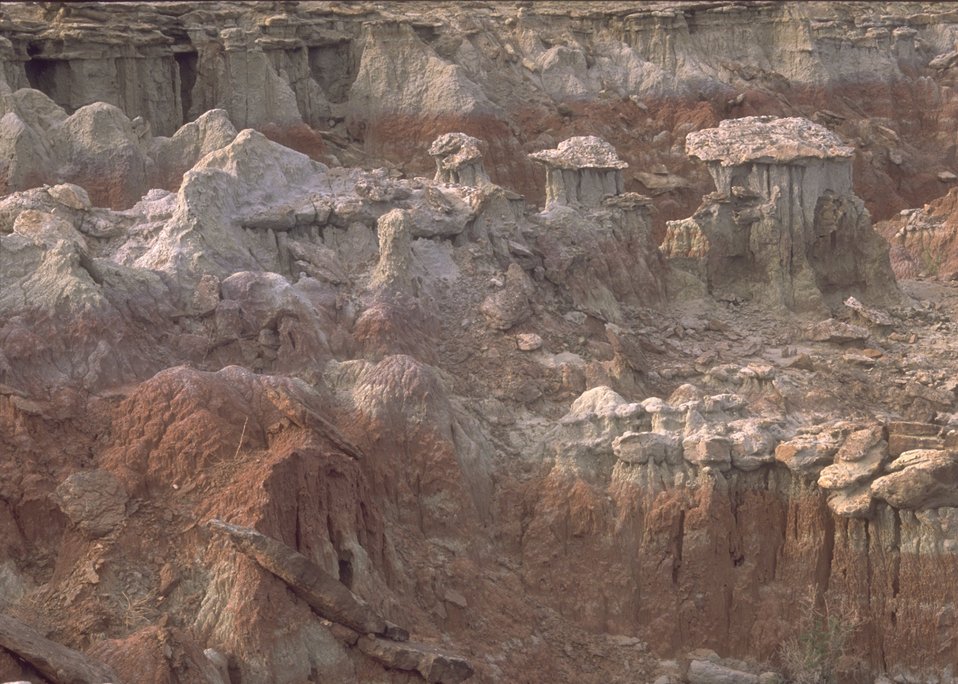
Gooseberry Interpretive Area, Worland Field Office.